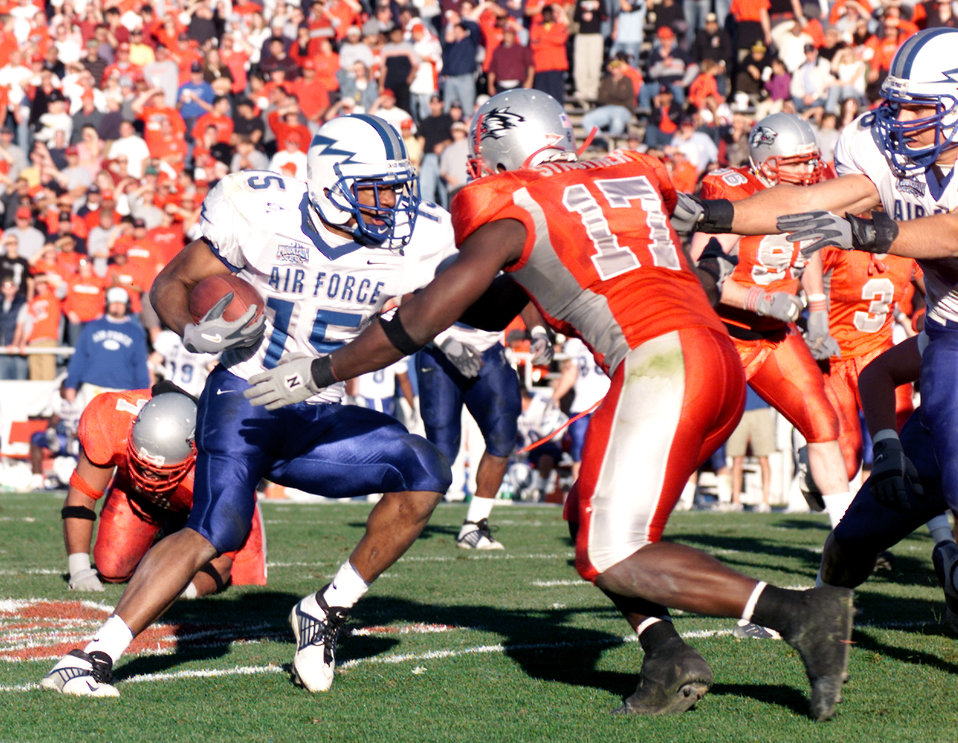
Lobos take Falcons, 24-12

ALBUQUERQUE, N.M. -- Air Force halfback Darnell Stephens cuts upfield to avoid the grasp of New Mexico linebacker Billy Strother. The junior rushed four times for 27 yards and the team's sole touchdown during Air Force's 24-12 loss to the University of New Mexico Lobos on Nov. 15.